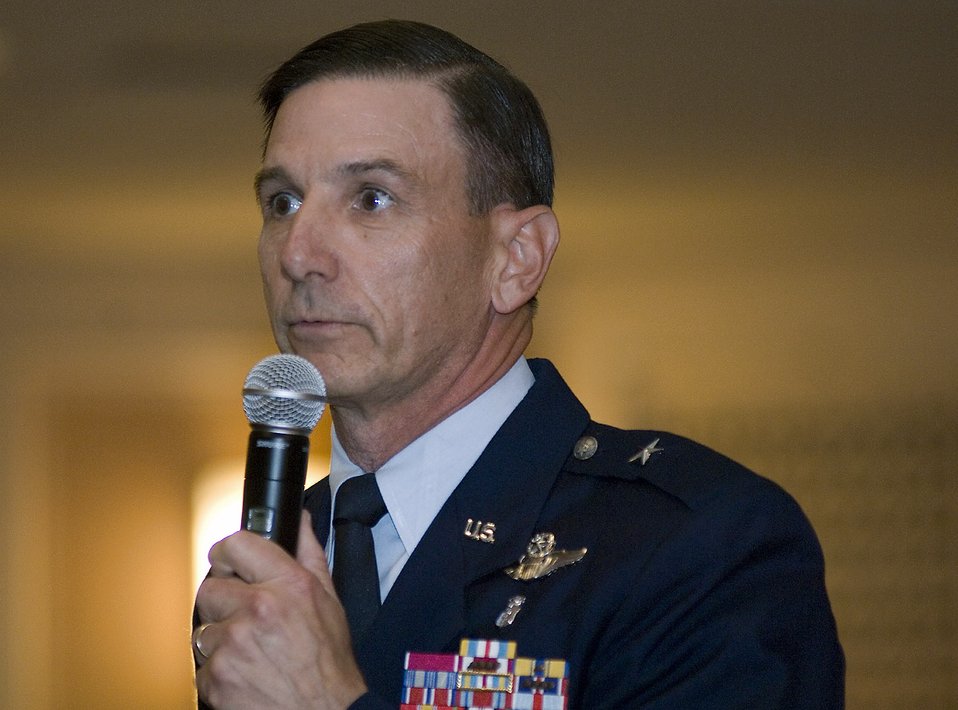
Presentation of 'Fighting for Life' documentary

Brig. Gen. (Dr.) Byron C. Hepburn, Command Surgeon of Air Mobility Command, introduces Terry Sanders, a two-time Academy Award winner, during a premiere showing of Mr. Sanders film 'Fighting for Life' during Air Force Week - Philadelphia May 28. The film is a feature documentary telling the stories of doctors and nurses fighting on the front lines of battle to save lives. The Air Force Week program is part of a proactive initiative to increase communication with the public. Air Force Week includes community visits and talks by Air Force officials, flight demonstration team performances and displays highlighting the Air Force men and women serving on the front lines.